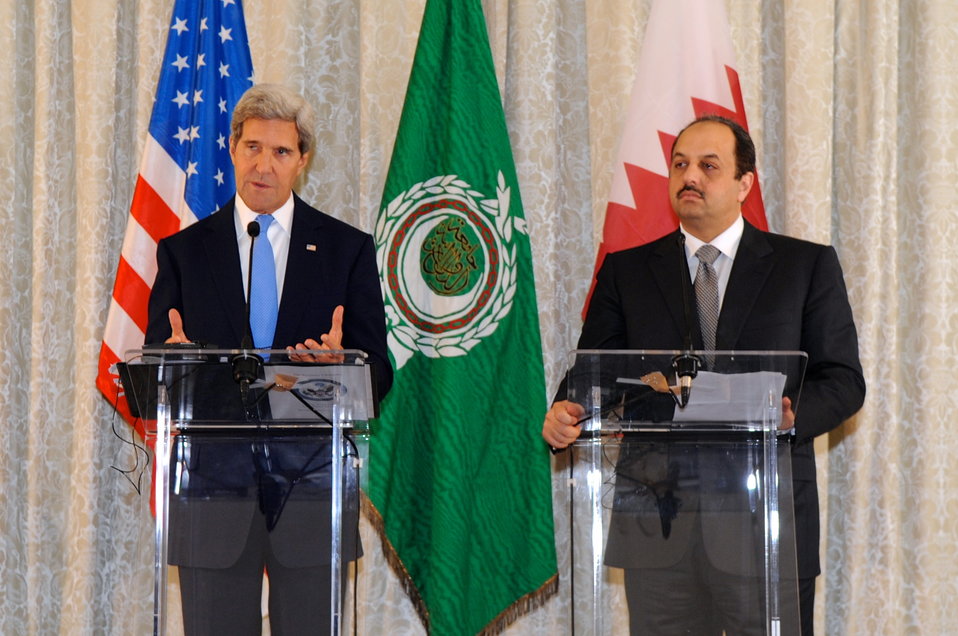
Secretary Kerry and Qatari Foreign Minister Al Attiyah Hold a Press Conference

U.S. Secretary of State John Kerry and Qatari Foreign Minister Khalid bin Mohamed Al Attiyah speak with reporters during a press conference that followed a meeting of the Ministerial Delegation of the Arab Peace Initiative in Paris, France on September 8, 2013.